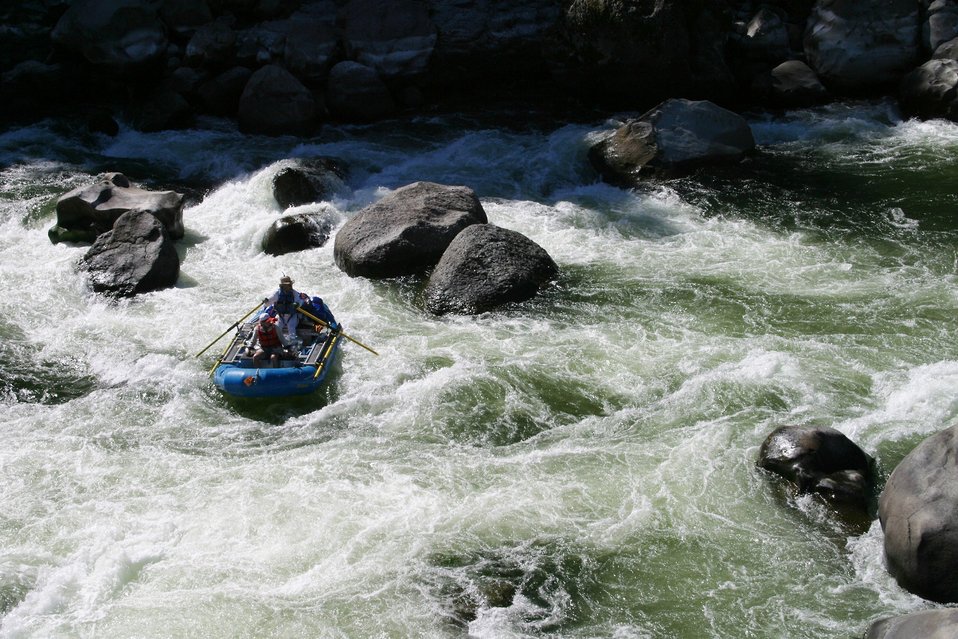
Blossom Rapids.